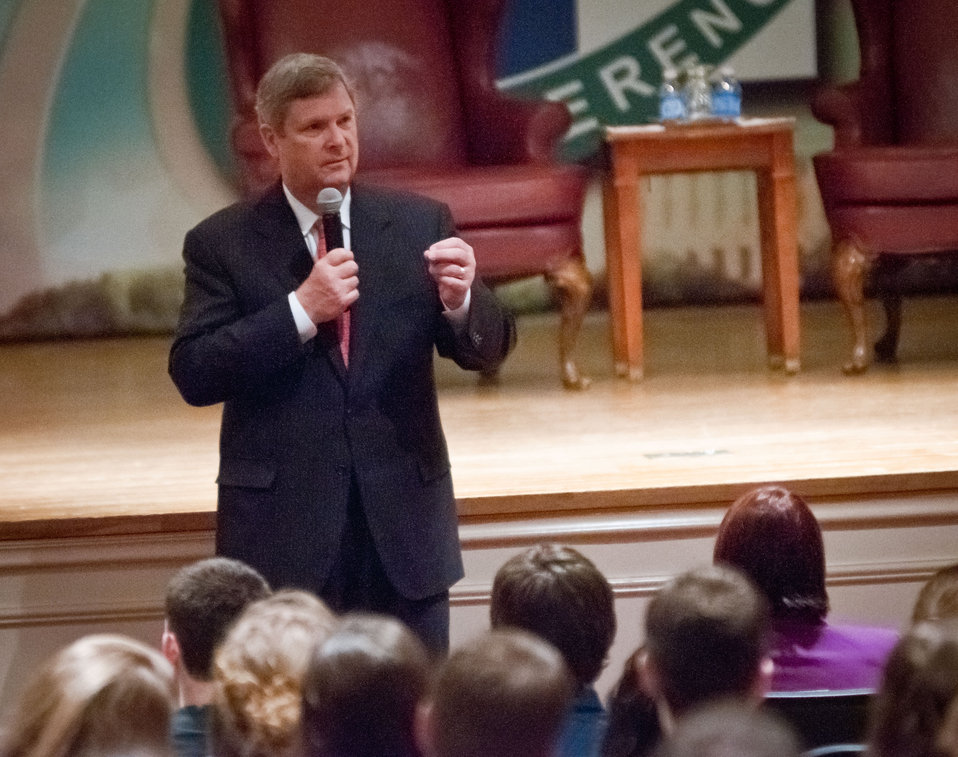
Agriculture Secretary Tom Vilsack speaks with 4-H members at the National 4-H Youth Center in Chevy Chase, MD, on Monday, March 26, 2012. Questions to Secretary Vilsack, included topics such as energy, foood security, People's Gardens, regulation, and labor, to name a few. 'For almost 100 years, USDA and 4-H have partnered to produce some of our nation's best and brightest, including farmers and ranchers who have supported the American economy and put food on our tables,' Vilsack said. 'You all are tomorrow's leaders. We need you to think big, innovate and help tackle the important challenges standing between us, a stronger middle class and a stronger nation.'